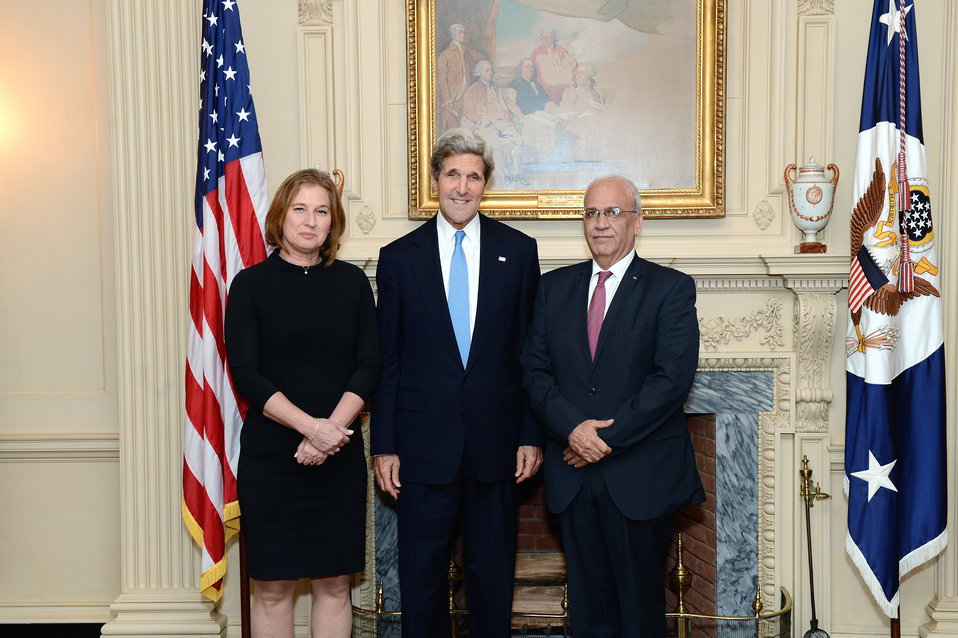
Secretary Kerry Meets With Israeli Justice Minister Livni and Palestinian Chief Negotiator Erekat

U.S. Secretary of State John Kerry meets with Israeli Justice Minister Tzipi Livni and Palestinian Chief Negotiator Saeb Erekat during an Iftar at the U.S. Department of State in Washington, D.C., on July 29, 2013.